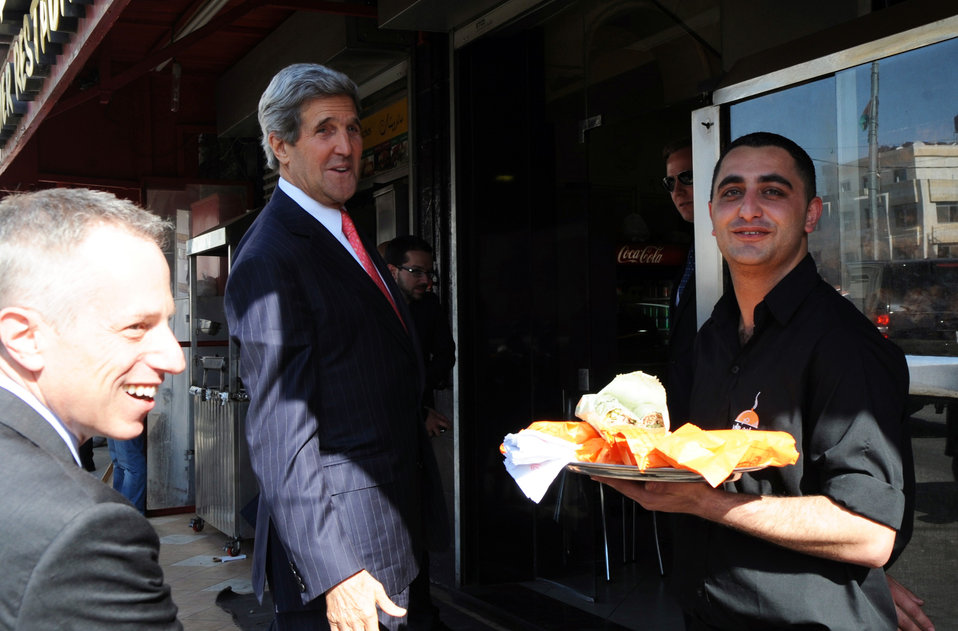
Secretary Kerry Visits a Shawarma Shop in Ramallah

U.S. Secretary of State John Kerry visits a shawarma shop in Ramallah on May 23, 2013.